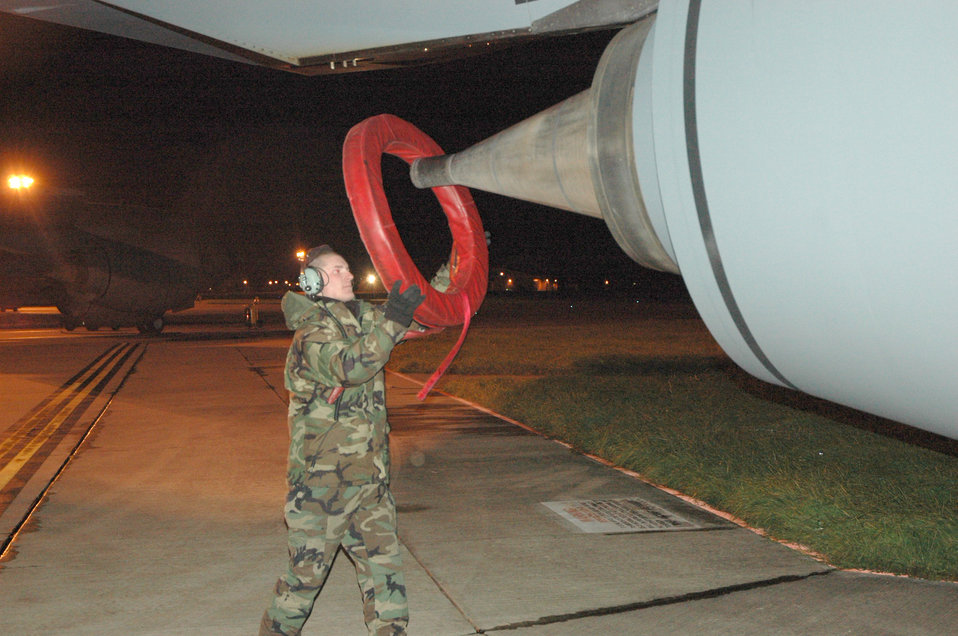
Fairchild, Grand Forks crews support NATO Summit

Staff Sgt. Justin Elder places protection covers on the engine of a 92nd Air Refueling Wing KC-135 Stratotanker deployed to Royal Air Force Mildenhall, England, Dec. 4. KC-135 aircrews, crew chiefs and maintainers from Fairchild Air Force Base, Wash., and Grand Forks AFB, N.D., are deployed RAF Mildenhall to augment its refueling wing. Sergeant Elder is a crew chief assigned to the 92nd Air Refueling Wing.